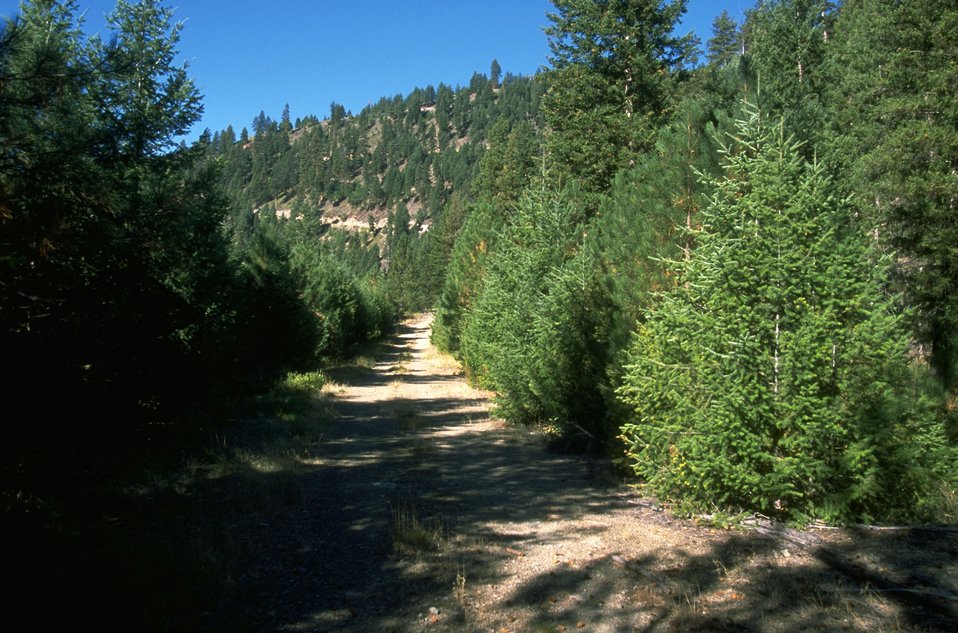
Road to the Buffalo non-motorized trail (formerly a railroad grade)